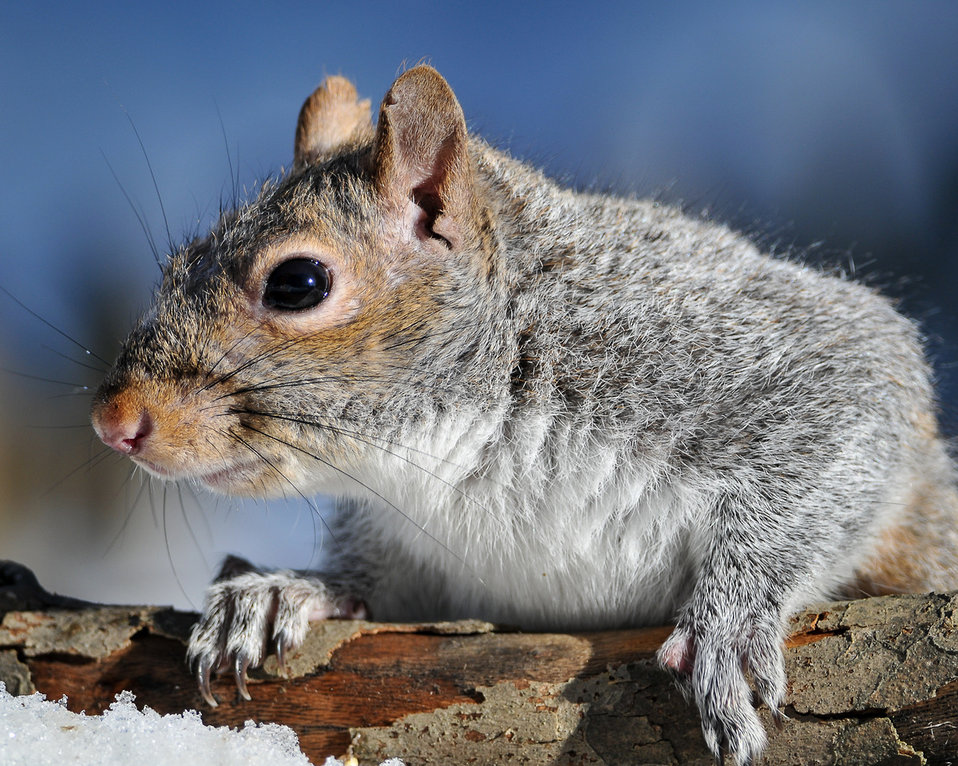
Gray squirrel photographed at Edwin B. Forsythe National Wildlife Refuge.